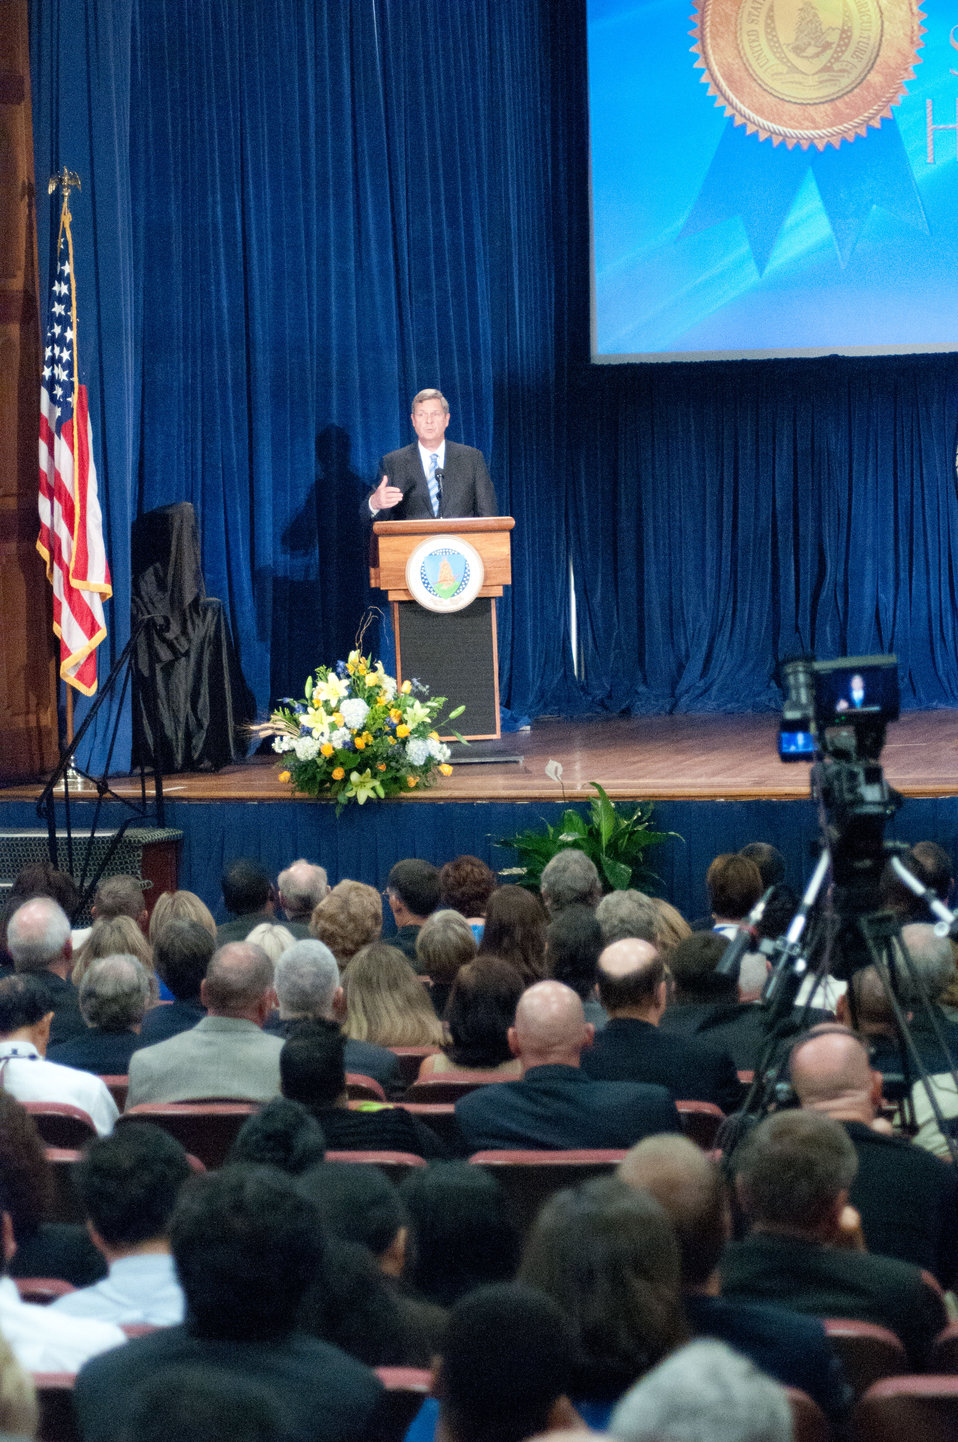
Agriculture Secretary Tom Vilsack makes remarks during the United States Department of Agriculture 63rd Secretary’s Annual Honor Awards ceremony held in the Thomas Jefferson Auditorium in Washington, D.C. on Wednesday, September 14, 2011.